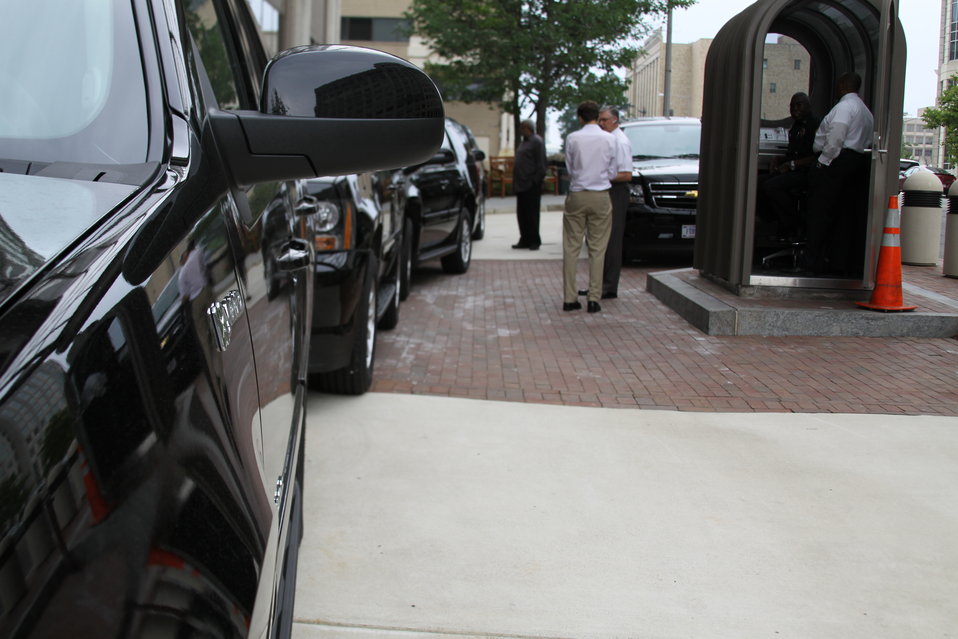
Tahoes 013